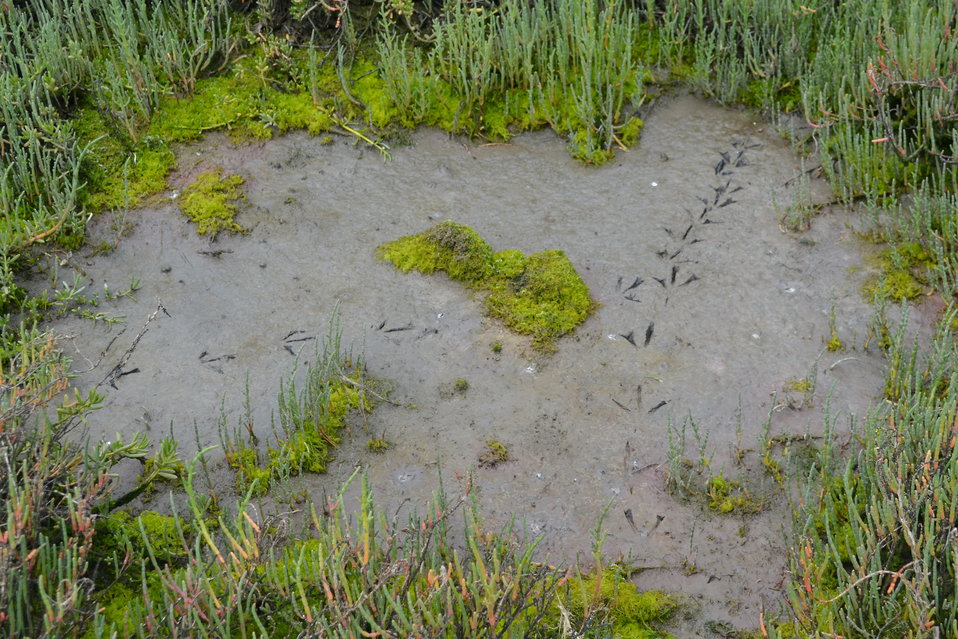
Bird tracks in the marsh